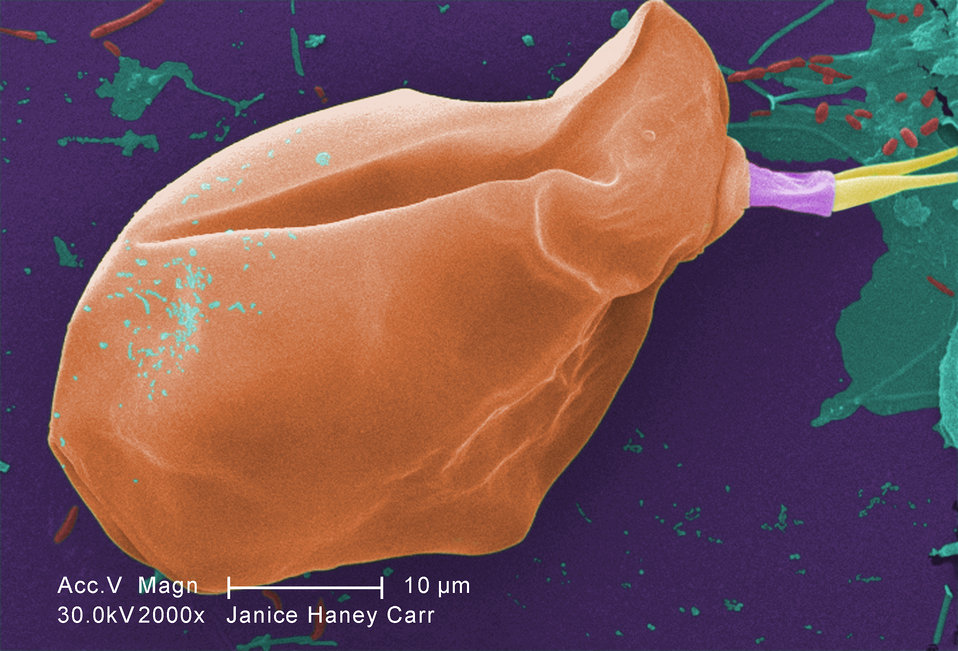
Under a moderate magnification of 2000X, this digitally-colorized scanning electron micrograph (SEM) of an untreated water specimen extracted from a wild stream mainly used to control flooding during inclement weather, revealed the presence of unidentified organisms, which included bacteria, protozoa, and algae. In this particular view, a single copepod-like microorganism was seen occupying the field of view. Also, if you look closely towards the upper right corner, you'll also notice the small grouping of bacteria, which had become enmeshed in a patch of biofilm.